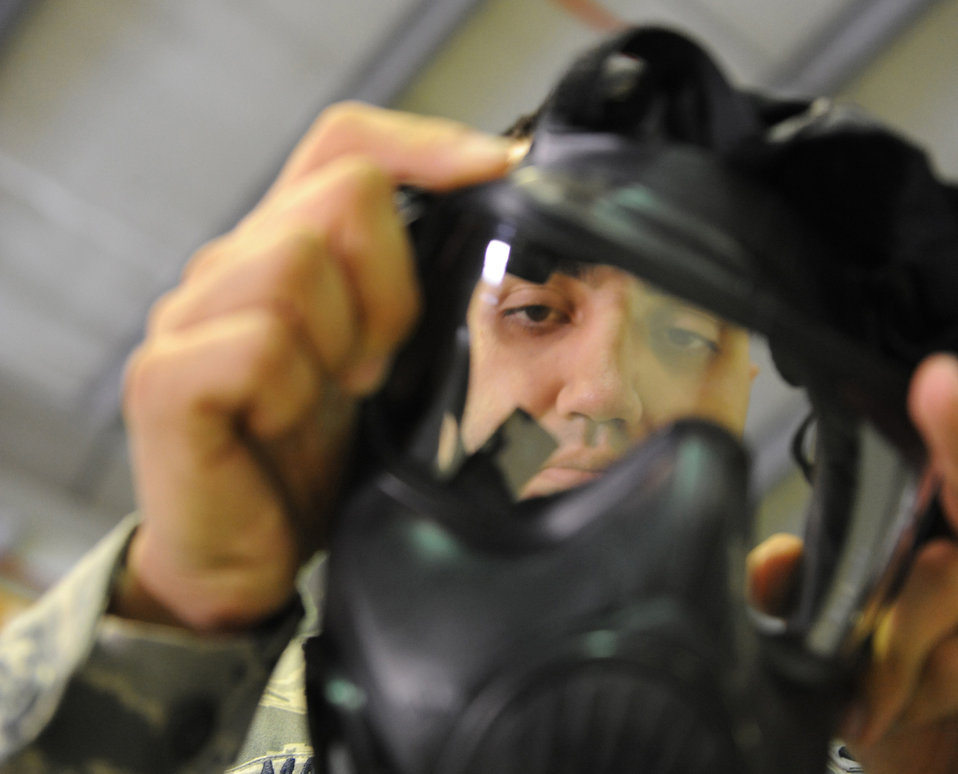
Supply Airman provides deployed troops with more than just equipment

Airman 1st Class Miad Maleki inspects a gas mask, Dec. 1, 2011, at the 380th Air Expeditionary Wing. Maleki, a native of Tehran, Iran, is a material management journeyman for the 380th Expeditionary Logistics Readiness Squadron. He issues, stores and maintains individual protective equipment, and is volunteering in his off time to teach a free Farsi class for the deployed troops at the wing.